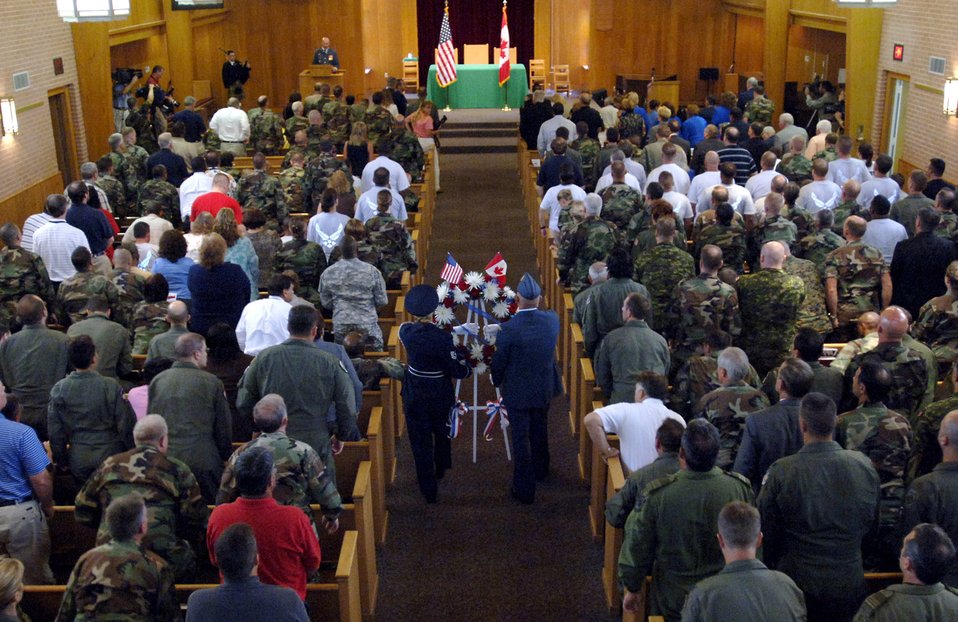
Tyndall ceremony honors 9/11 heroes, victims

More than four hundred military and civilian personnel attended a special remembrance ceremony Sept. 11 at the Tyndall Air Force Base, Fla., chapel to commemorate the victims and heroes of the 9/11 attacks.